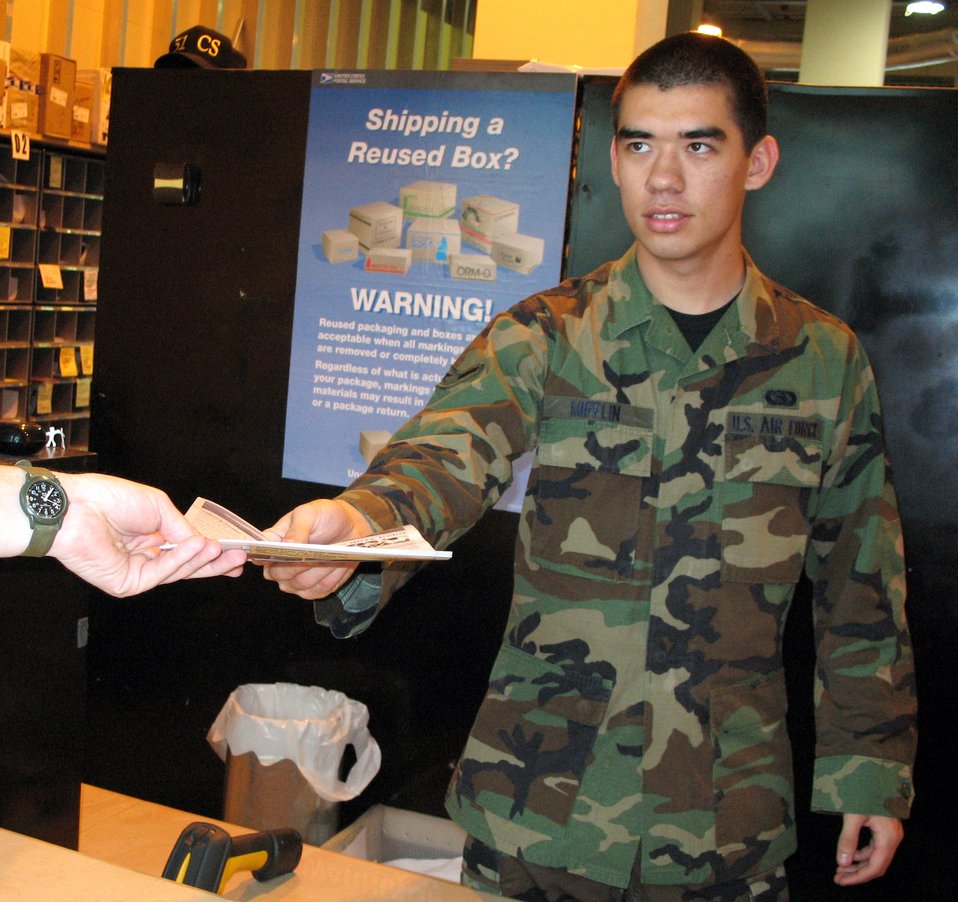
First term Airmen's Center helps with transition into Air Force

Airman Ron Mifflin works at the pick-up window May 4 at the Aviano Air Base Post Office. Airman Mifflan is one of many Airman doing details during his first week attending the First Term Airmen's Center. During FTAC, first-term Airman do base details as well as attend briefings to help orient them to their new base.